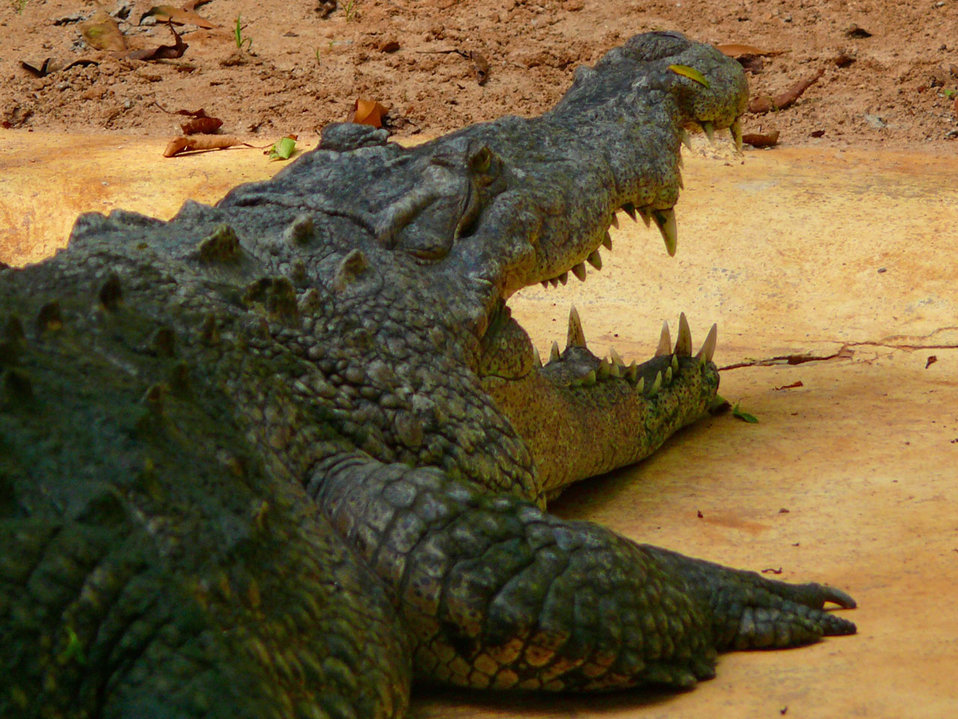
Crocodile in nature environment.